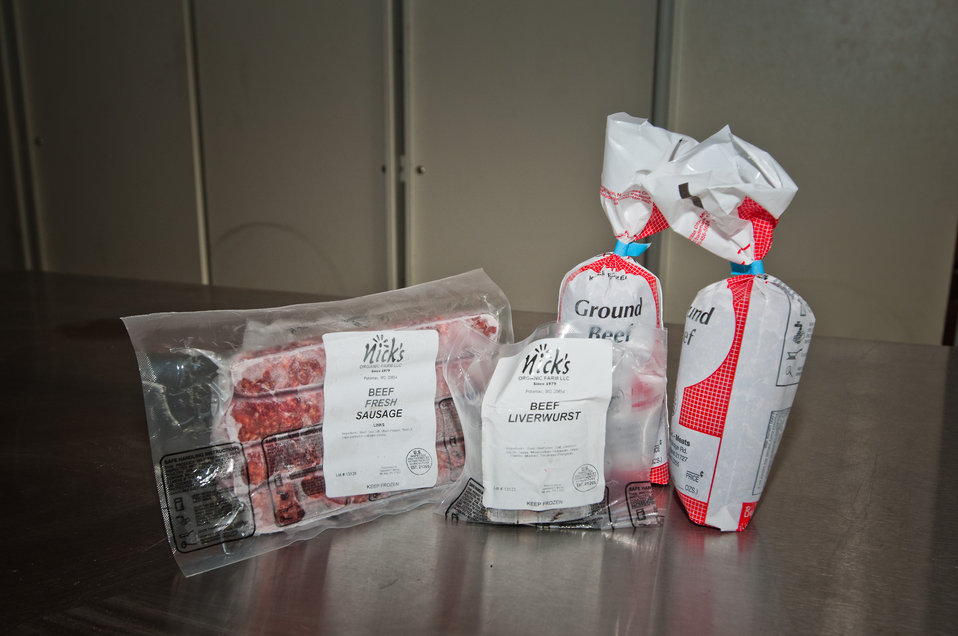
Beef products from Nick’s Organic Farm, in Adamstown, MD, on Friday, July 12, 2013. The farm, owned by Nick Maravell, produces Black Angus beef, chicken, turkey, eggs, hay, soybeans, corn, alfalfa, orchard grass, rye; and other crops. The cattle are100% grass-fed receiving certified organic pasture, certified organic hay (in winter), water and mineral salts mixed with sea kelp. The cattle are not fed hormones, antibiotics or animal products. Poultry feed from grain is ground from organic grain. The poultry also graze on organic pastures. The farm has conducted on-farm research with federal, state and non-profit agencies to refine organic practices. An organization such as the U.S. Department of Agriculture (USDA)